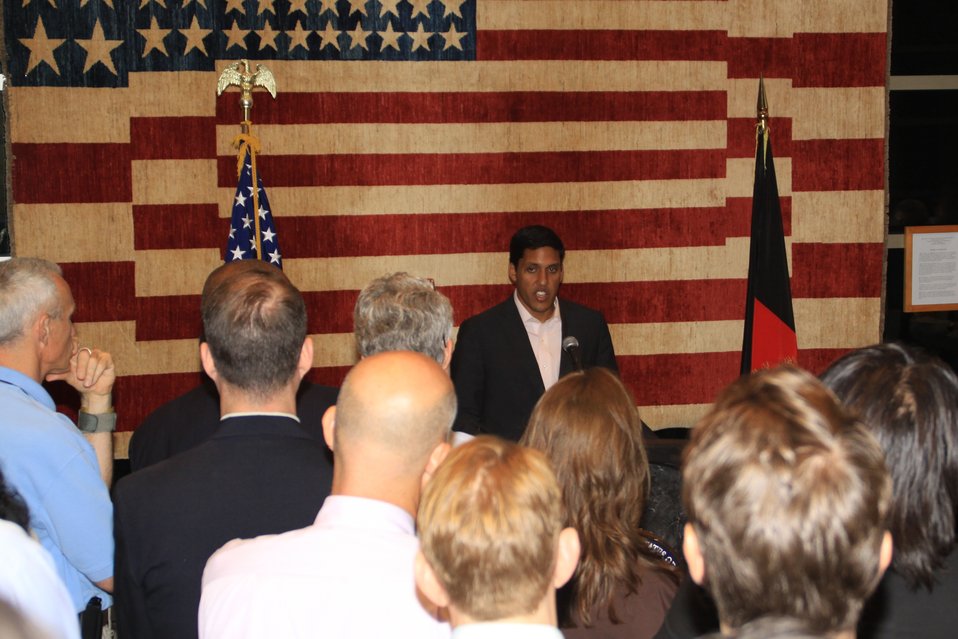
US Embassy Town Hall July 21, 2010